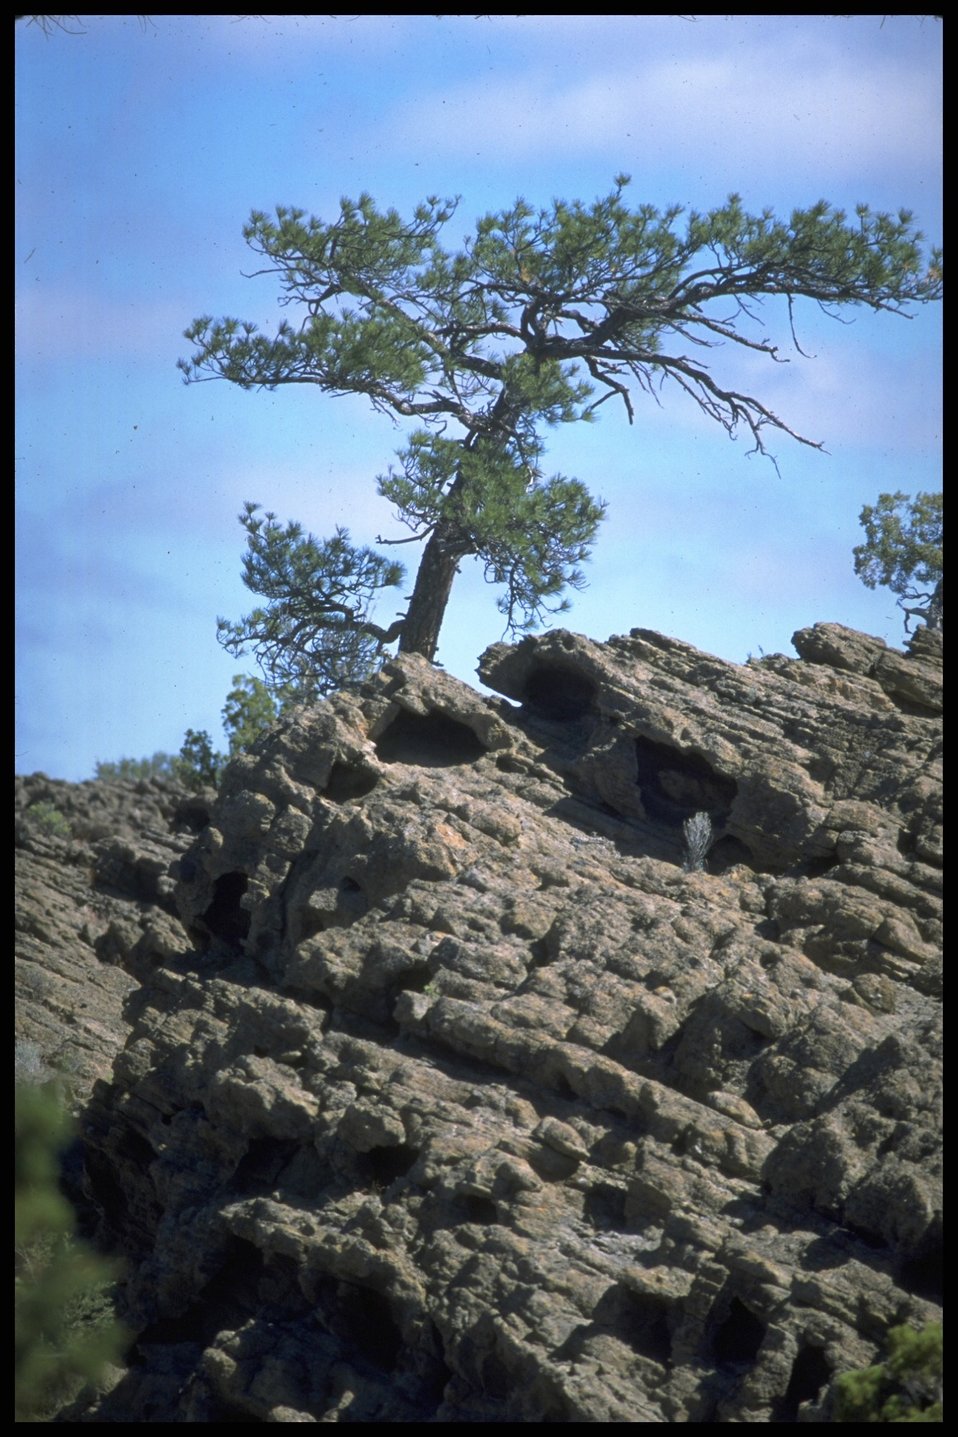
Scenic view of Sand Rock, Lost Forest. Lakeview District.